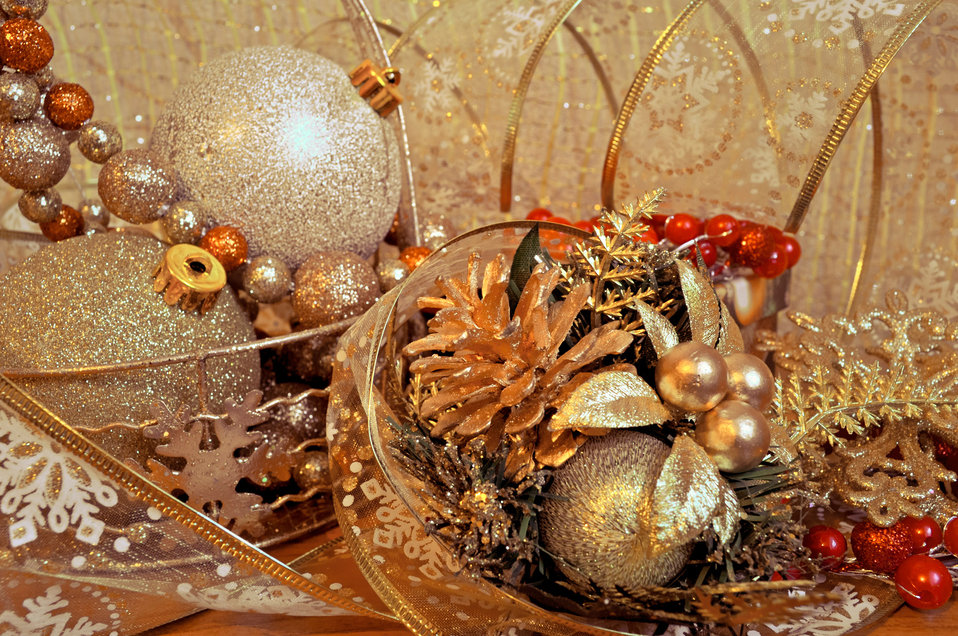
Christmas background

Christmas decorations.